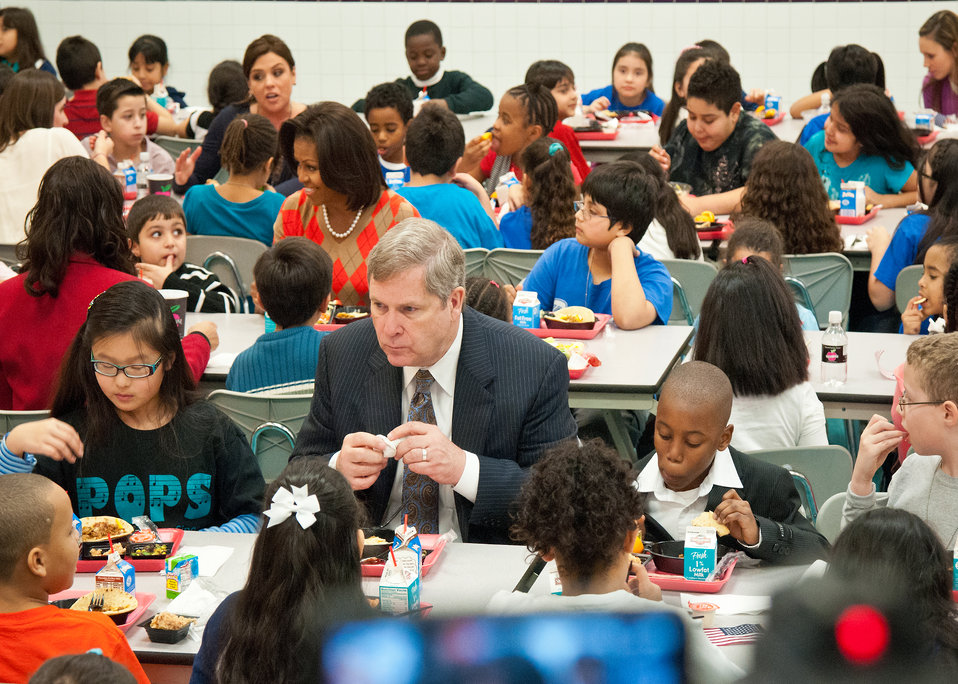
Agriculture Secretary Tom Vilsack joined First Lady Michelle Obama and celebrity cook Rachel Ray at Parklawn Elementary School in Alexandria, Virginia, on Wednesday, January 25, 2012 to speak with faculty and parents about the United States Department of Agriculture’s new and improved nutrition standards for school lunches. An important accomplishment of the Healthy, Hunger-Free Kids Act that President Obama signed into law last year, USDA is making the first major changes in school meals in over 15 years. The new standards encourage fruits and vegetables every day of the week, increasing offerings of whole grain-rich foods, offering only fat-free or low-fat milk and making sure kids are getting proper portion sizes.